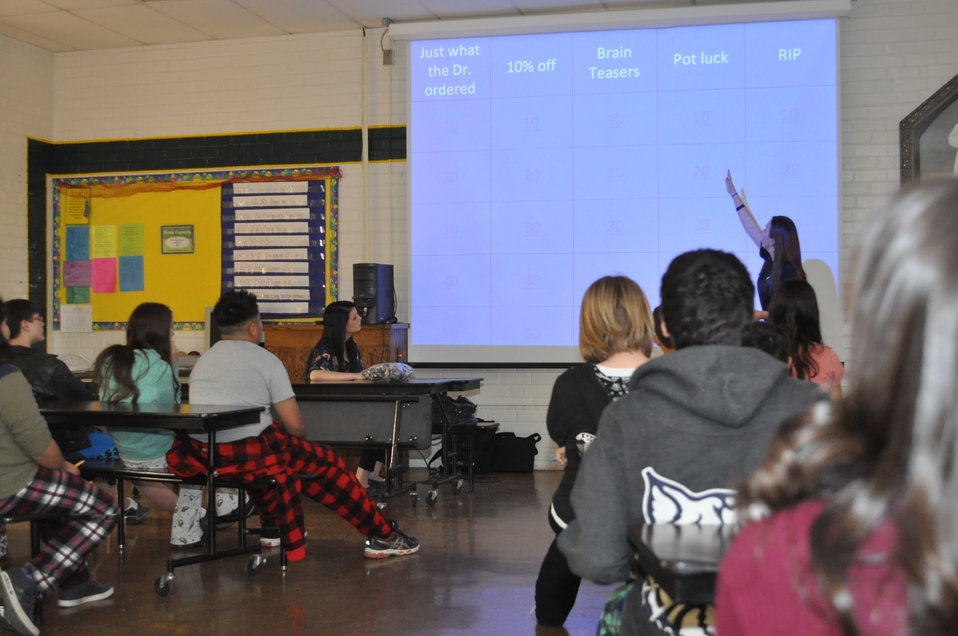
NDFW Jeopardy Events in AZ

In honor of the 2014 National Drug Facts Week, Casa Grande Alliance went to St. Anthony of Padua School in Casa Grande, AZ and played Drug Facts Chat Jeopardy! The students learned that M.O.S.T. (Our Social Norm Campaign that stands for Making Our Students Think) Casa Grande youth don't use drugs or drink alcohol! The students were also able to get their drug and alcohol questions answered and boy did they have some good ones to ask!